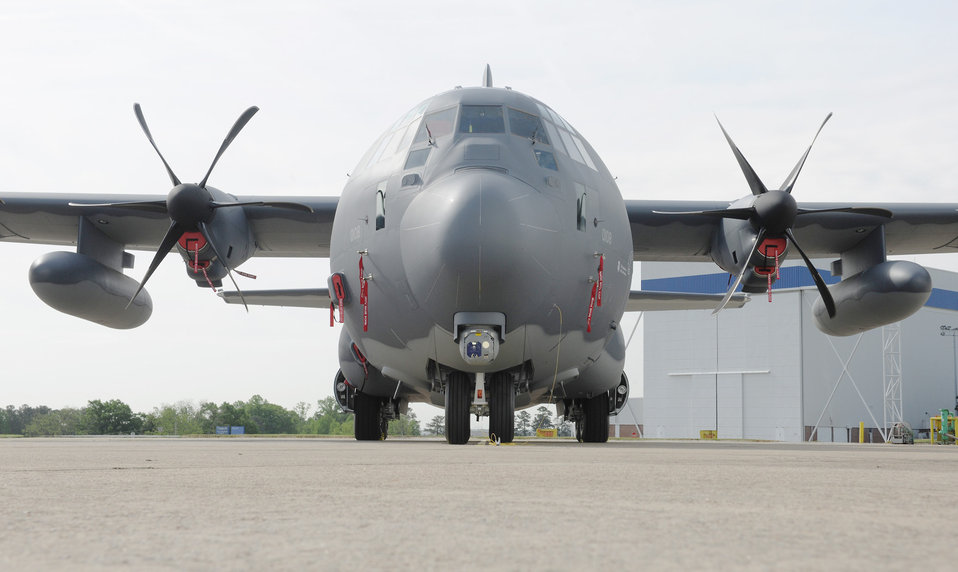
Air Force officials unveil rescue aircraft model

The HC-130J Super Hercules aircraft will replace the older version of the C-130 and has an improved diagnostic system, a universal air refueling receptacle and enhanced generators that enable aircrews to power more equipment.